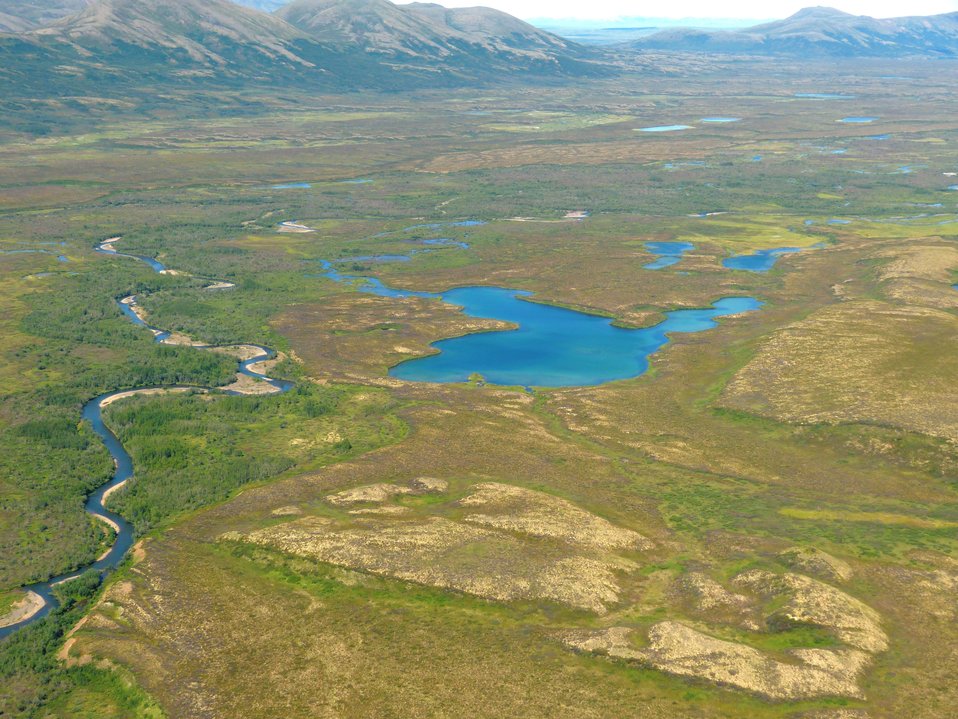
Kwethluk River, Kilbuck Mountains, Yukon Delta National Wildlife Refuge

Photo by: Kristine Sowl,
USFWS, Yukon Delta NWR, July 11, 2013